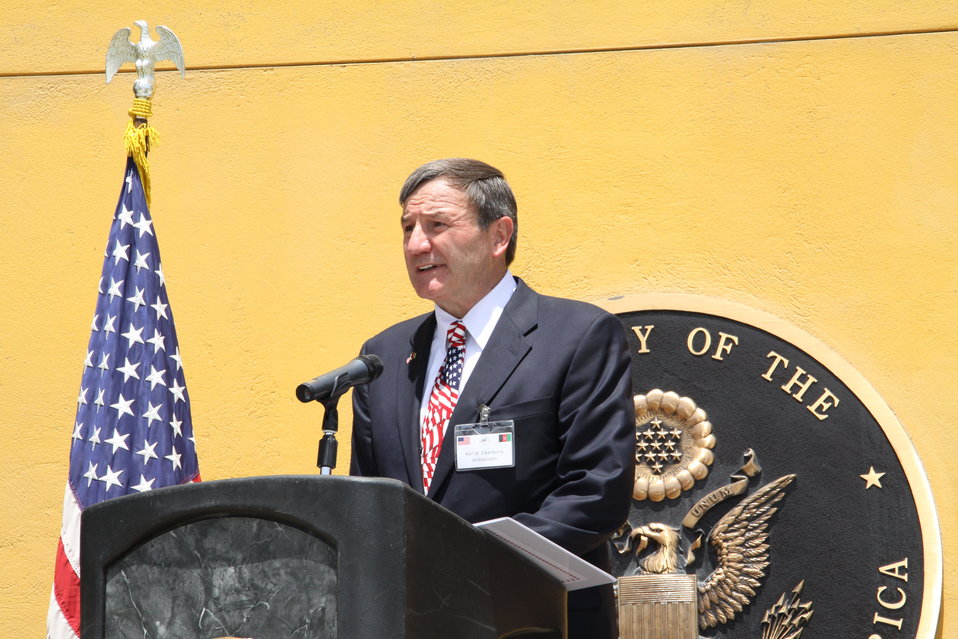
Kabul Official July 4th Celebration